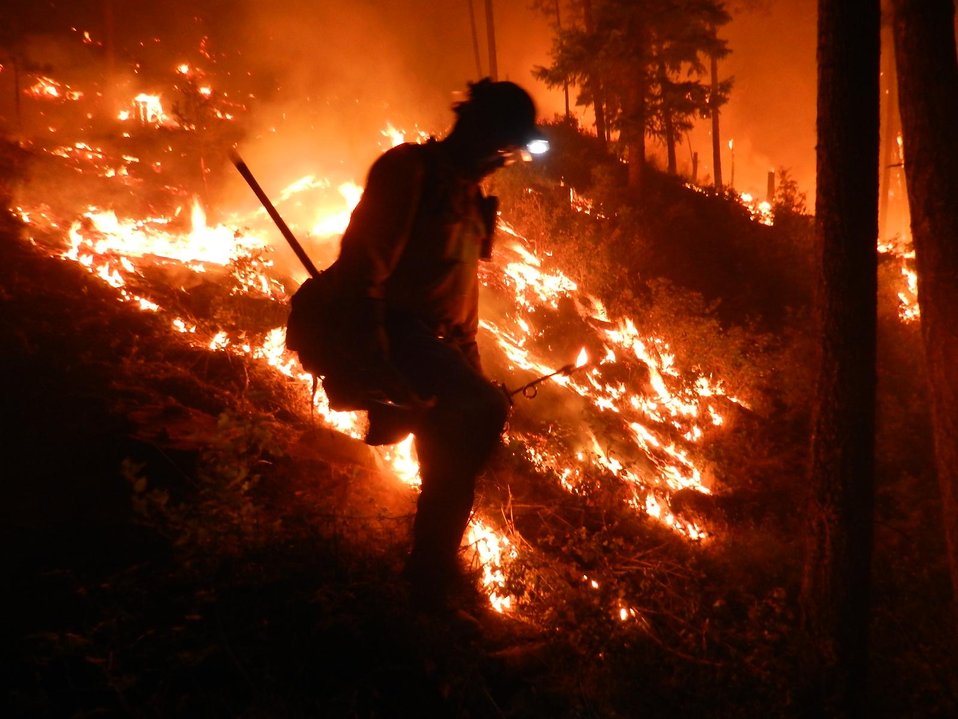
A Navajo Hotshot firefighter in Division A battles the West Mullan Fire in the Lolo National Forest, MT. The West Mullan Fire in the Lolo National Forest in Montana near Superior, MT began on Jul. 14, 2013 was due to human interference and has consumed approximately 6, 090 acres. The West Mullan Fire is approximately 45% contained.